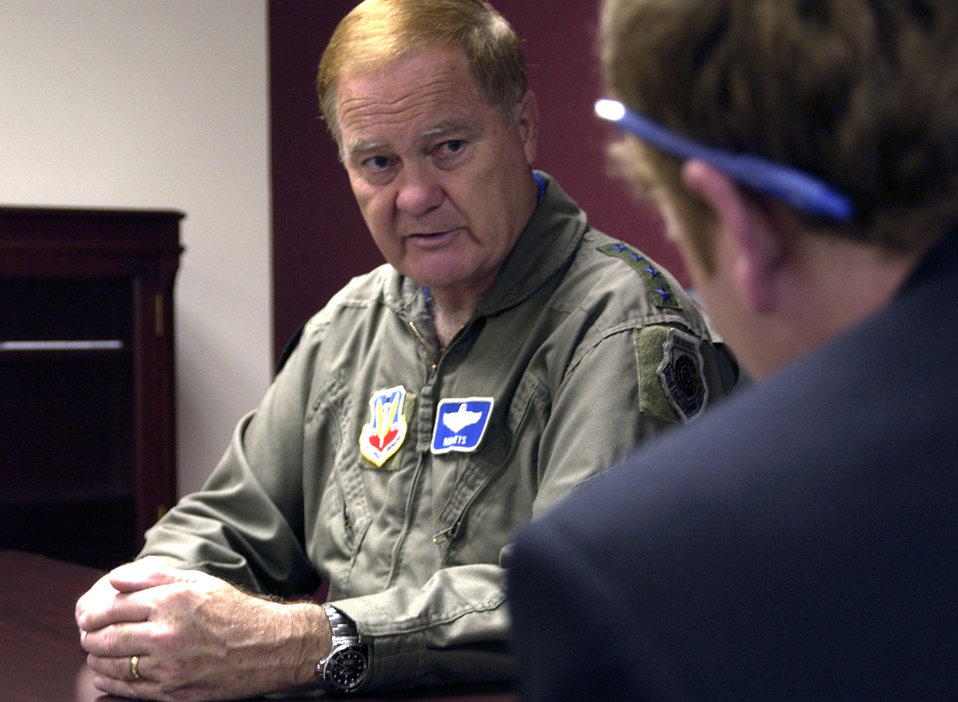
ACC leader: Air Force must balance resources, look ahead

Gen. Ronald E. Keys outlines the strain put on equipment and Airmen by increased operations tempo during an interview May 14 at Offutt Air Force Base, Neb. General Keys is the Air Combat Command commander, in charge of the primary force provider of combat airpower to America's warfighting commands.